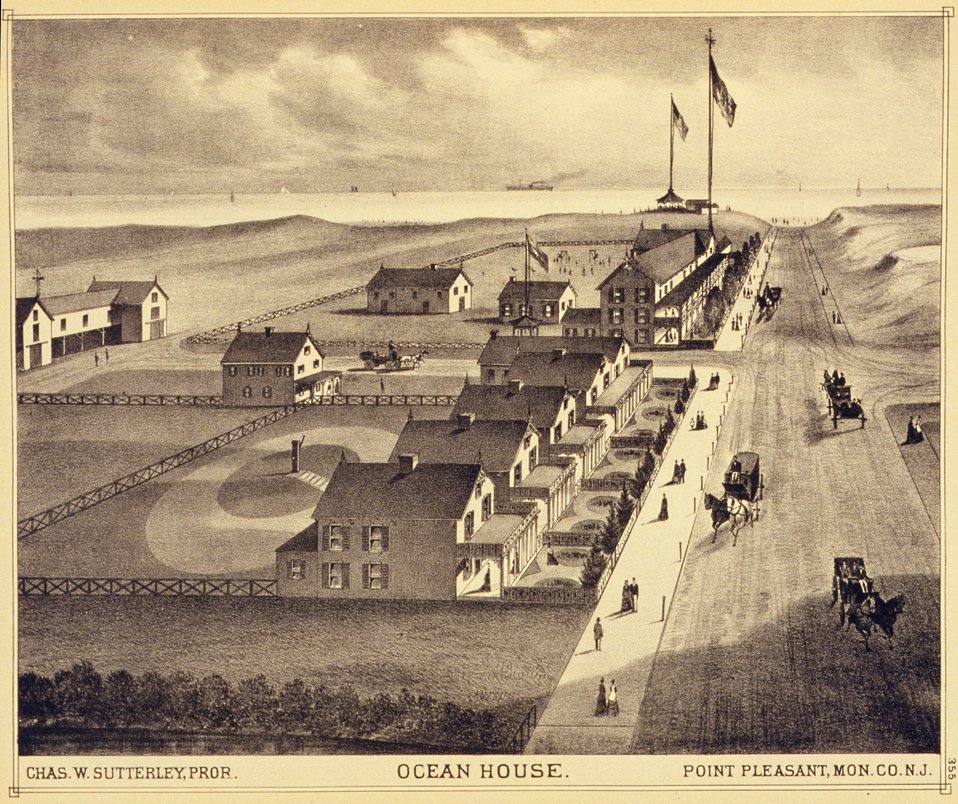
Ocean House, Point Pleasant, Monmouth County, N.J. P. 355. 'Historical and Biographical Atlas of the New Jersey Coast,' by T. F. Rose, 1878.